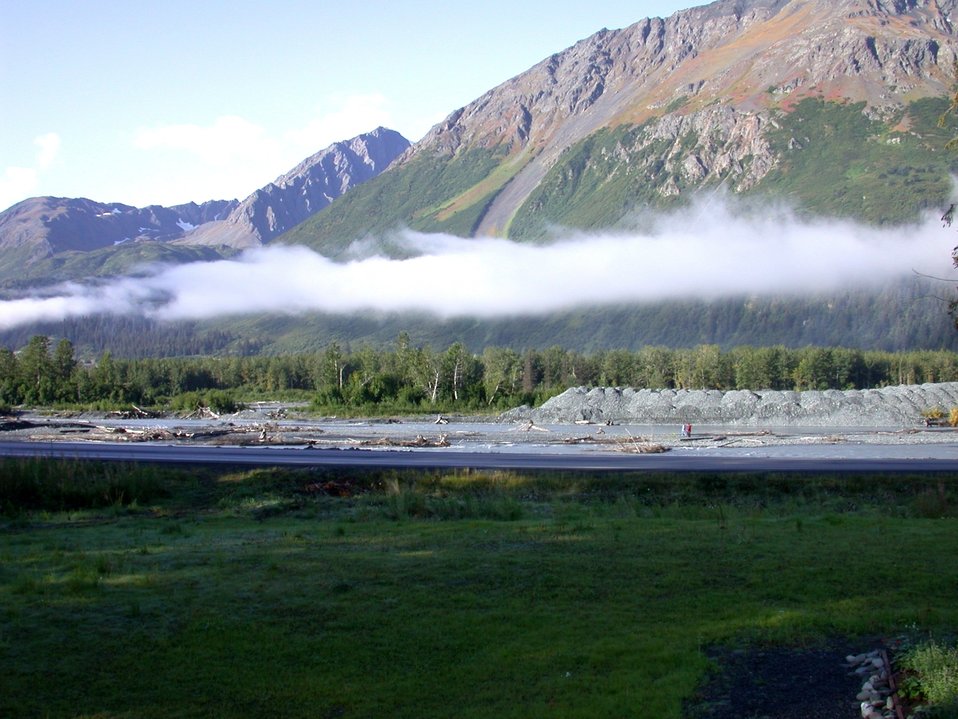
Moose Pass area between Seward and Anchorage.